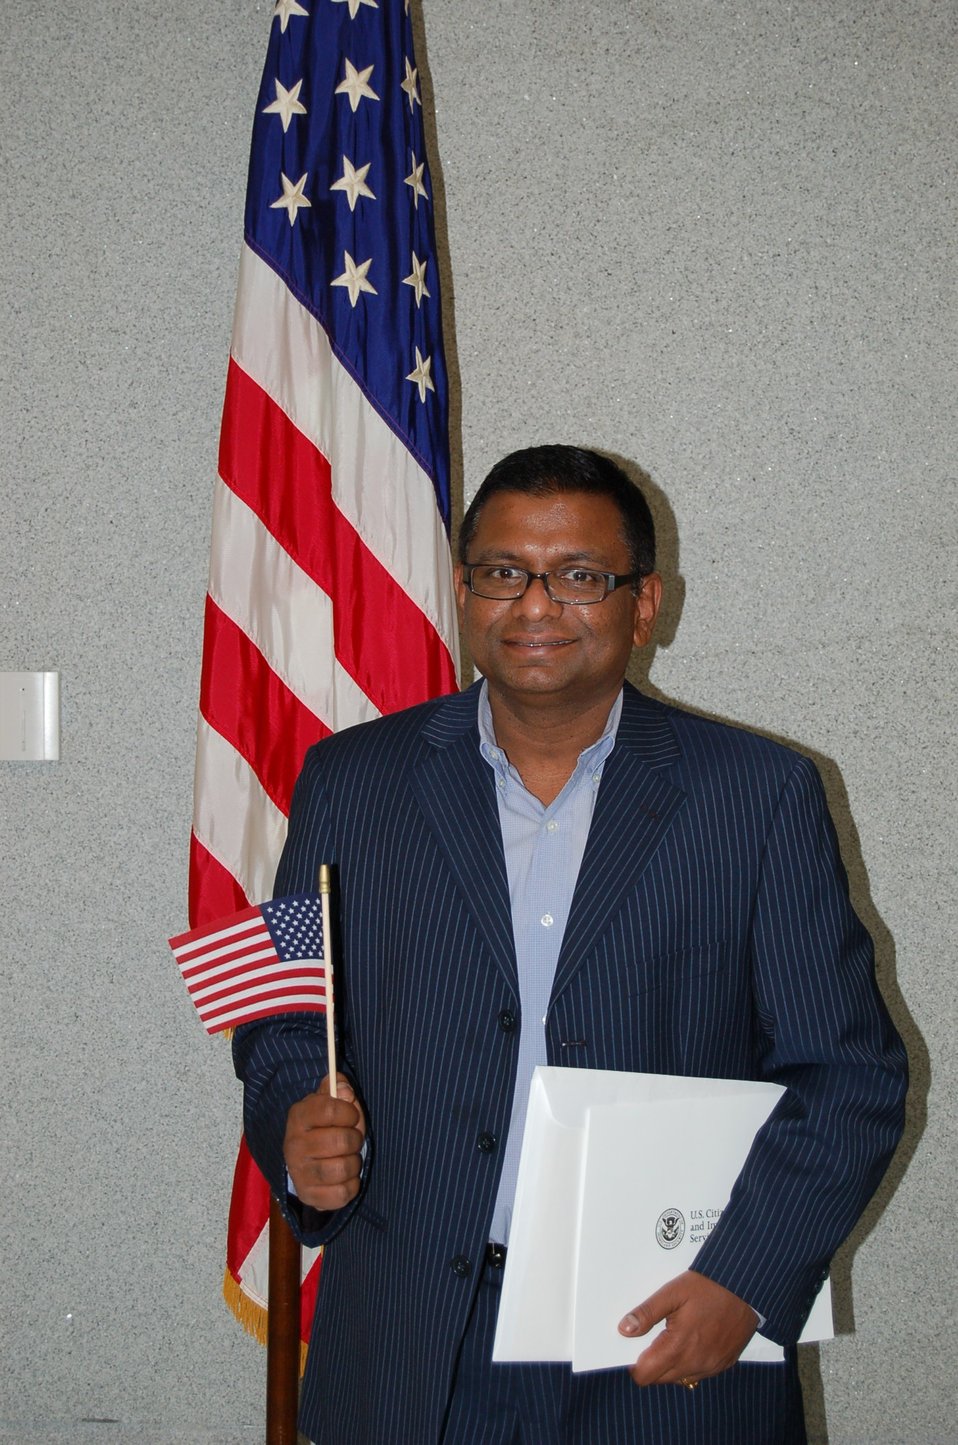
New Citizens